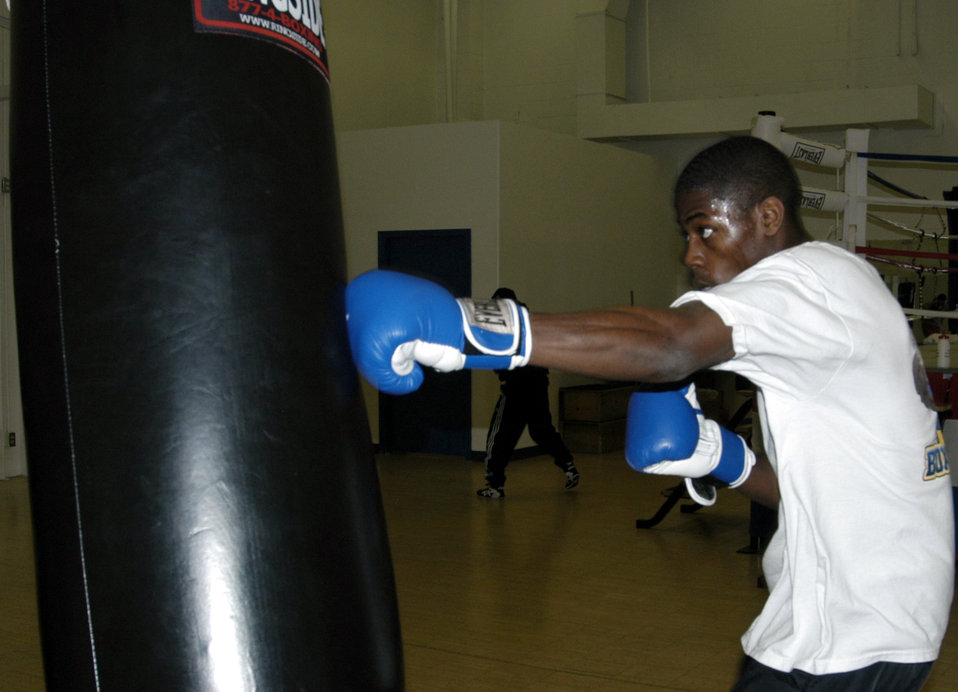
Knockout

LACKLAND AIR FORCE BASE, Texas -- James Johnson works out at an Air Force Boxing Team practice here Jan. 27. Johnson, stationed at Dyess Air Force Base, Texas, took home the title in the 165-pound weight class at the 2004 Everlast U.S. Championships in Colorado Springs, Colo., recently.